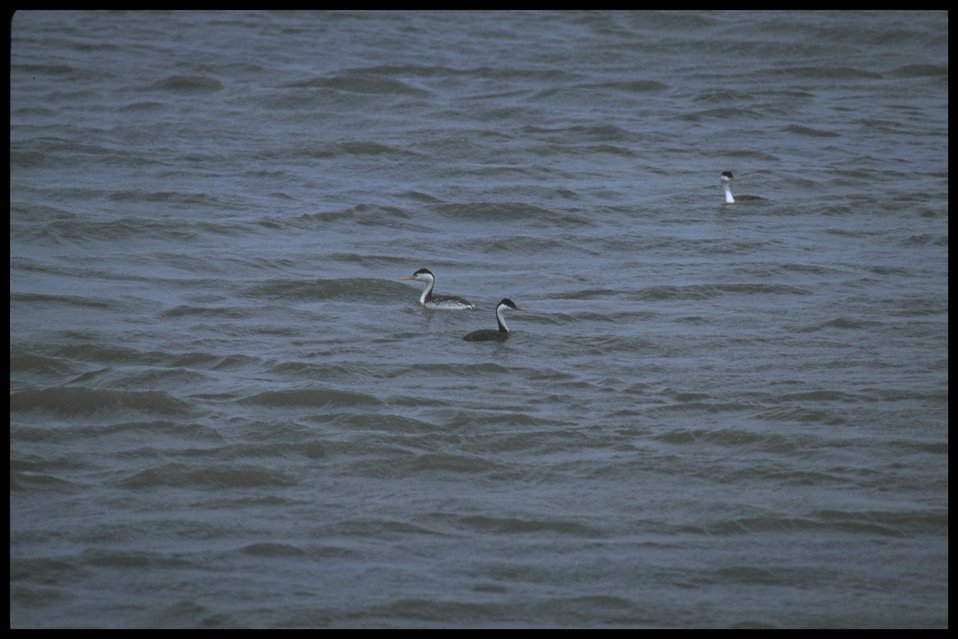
Far shot of Western Grebe, Lakeview District.